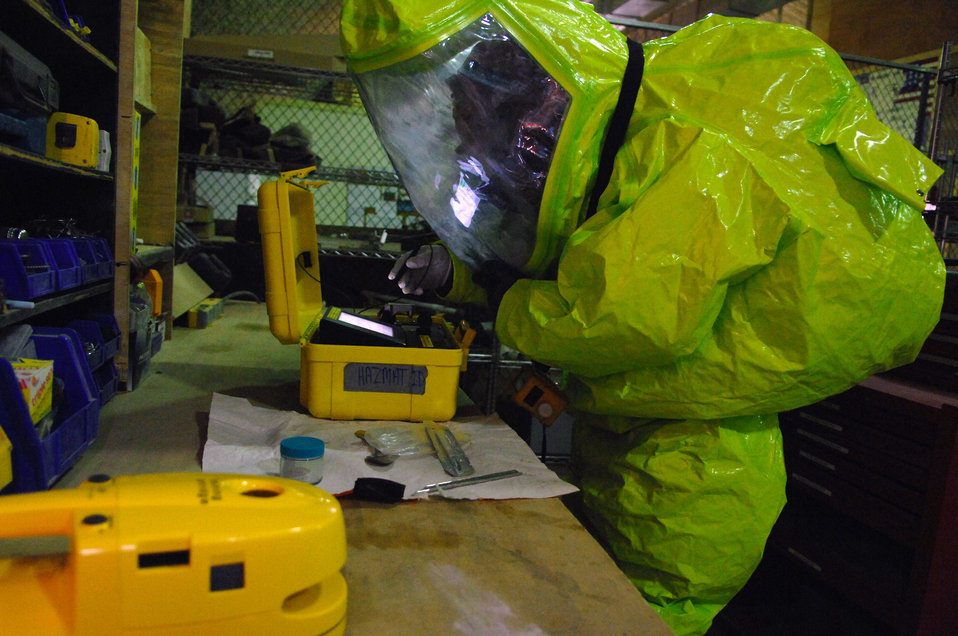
Battle drills condition emergency responders

Senior Airman Michael Blair tests a sample of a mysterious substance during a battle drill held March 26 at Balad Air Base, Iraq. Emergency managers must keep their skills sharp by frequently conducting battle drills. Airman Blair is a 332nd Expeditionary Civil Engineer Squadron emergency manager and is deployed from McGuire Air Force Base, N.J.